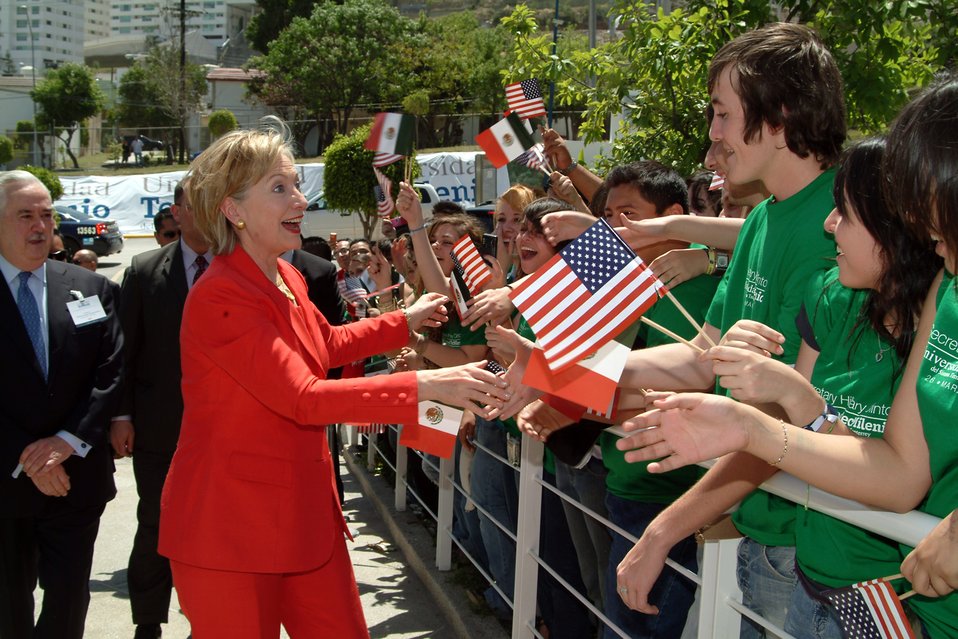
Secretary Clinton at TecMilenio University

U.S. Secretary of State Hillary Rodham Clinton greets students upon arrival at Tecmilenio University in Monterrey, Mexico March 26, 2009.